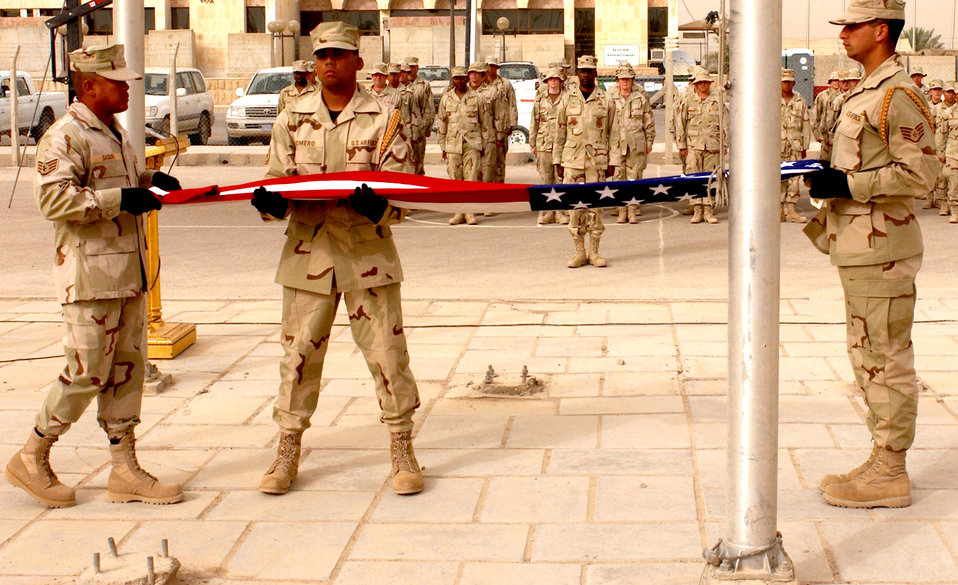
Honoring freedom

BAGHDAD, Iraq -- (From left) Staff Sgt. Aldrin Saguin, Tech. Sgt. Joseph Romero and Staff Sgt. Steve Gutierrez fold the flag during a retreat ceremony here celebrating Independence Day. The Airmen are honor guard members and are assigned to the 447th Expeditionary Civil Engineer Squadron here. They are deployed from Kadena Air Base, Japan.